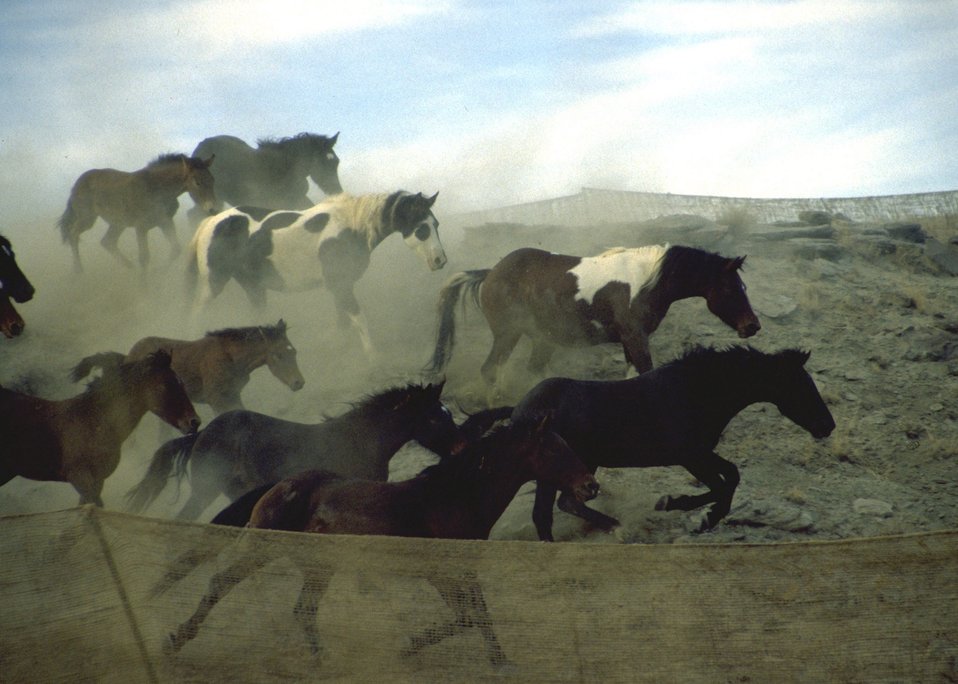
Wild horses.